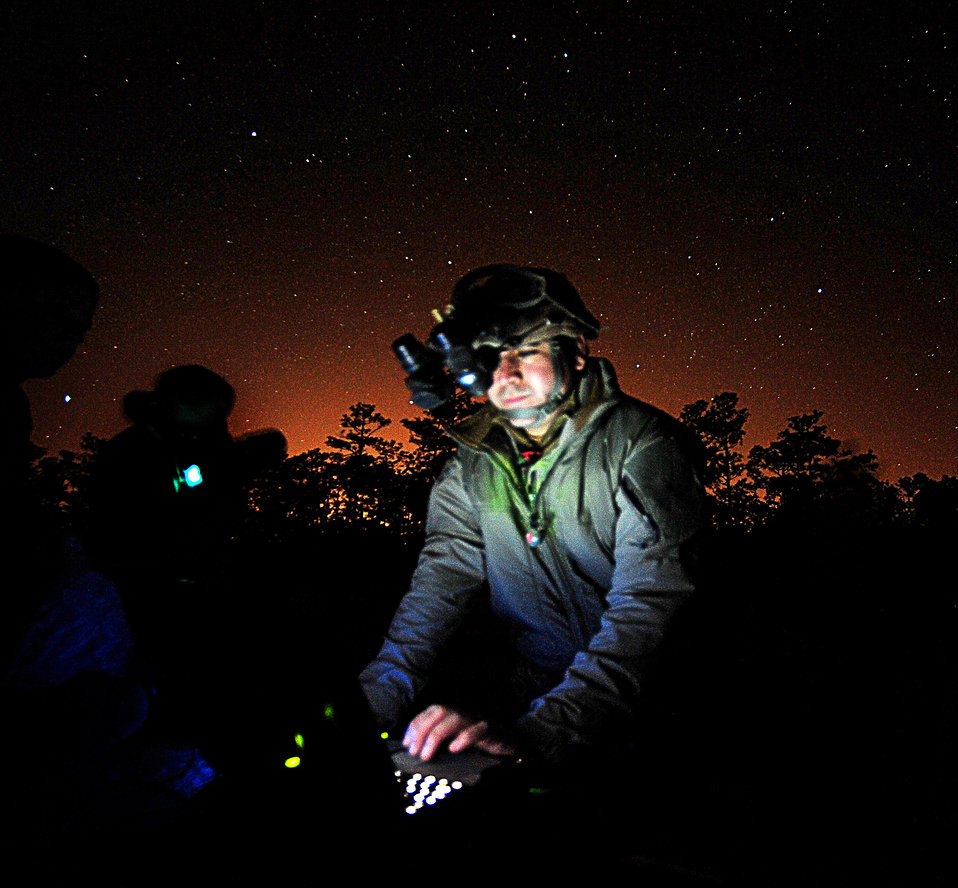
Wilderness lighting

Staff Sgt. Nathan Casillas communicates with an AC-130 Spooky March 15, 2010, during Exercise Emerald Warrior 10 at Fort Walton Beach, Fla. The training is a U.S. Special Operations Command sponsored mission rehearsal exercise involving multi-service participants. Sergeant Casillas is a joint terminal attack controller.